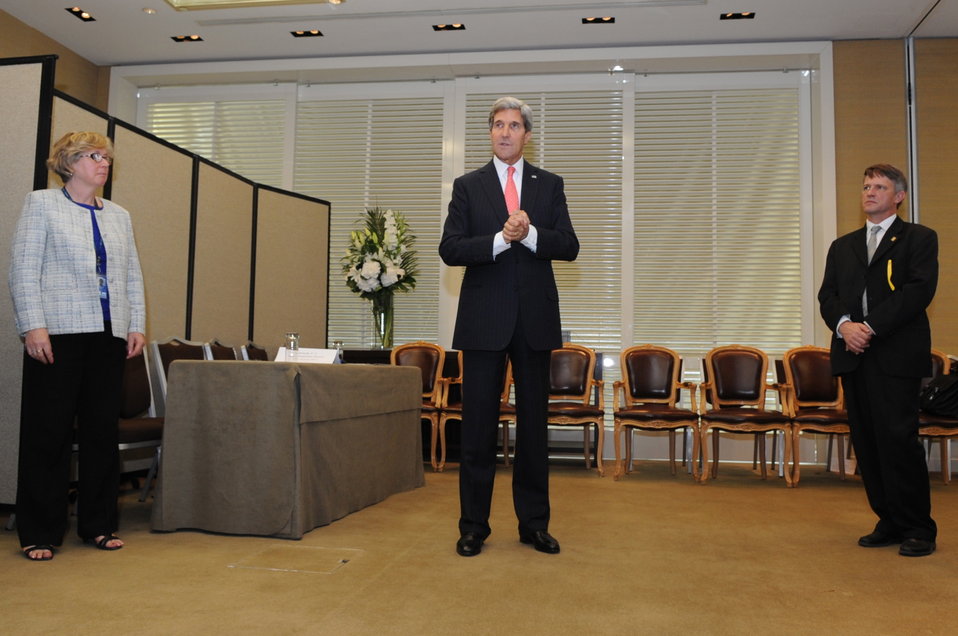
Secretary Kerry Praises Staff Members After Marathon Negotiating Sessions

1:04 p.m., September 14 - U.S. Secretary of State John Kerry urged his staff to take a break, join him later for dinner, and then catch up on their sleep after a marathon series of negotiations with Russian officials produced an agreement to eliminate Syrian chemical weapons.